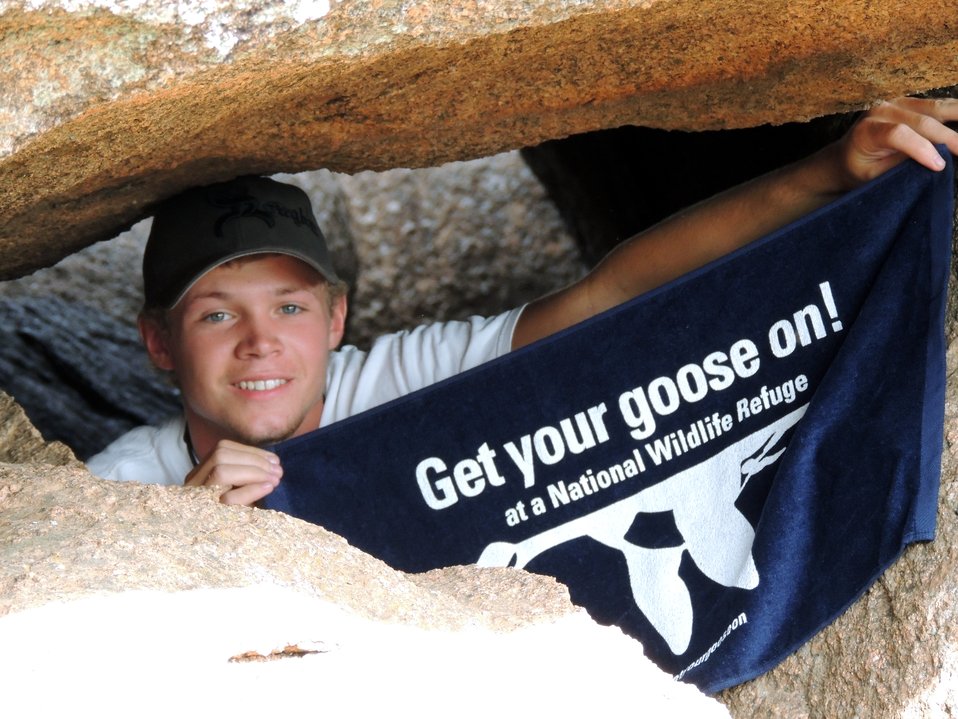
Get Your Goose On!

Wichita Mountains National Wildlife Refuge in Oklahoma.